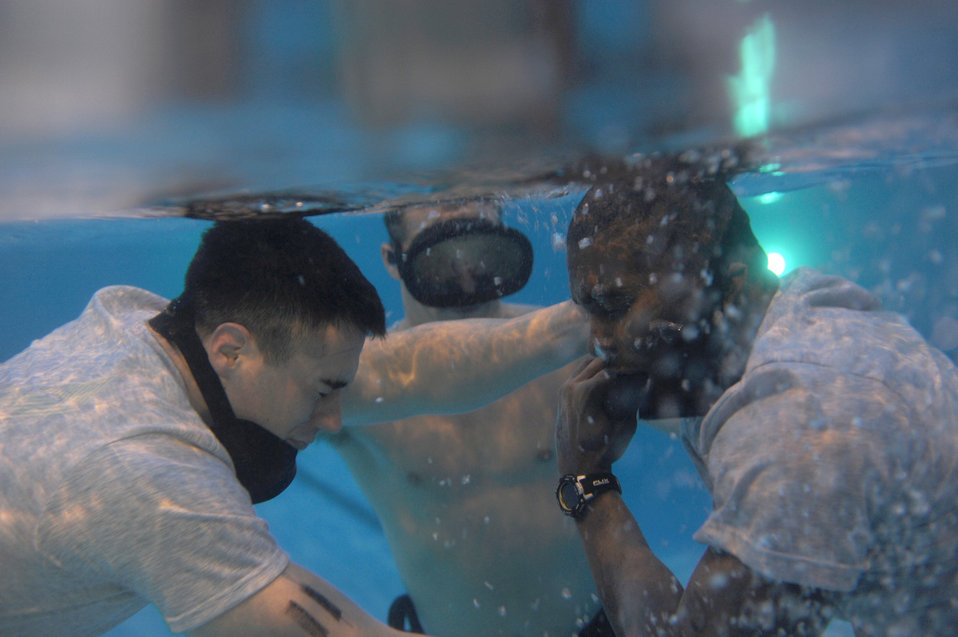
Combat control candidates vie for shot at scarlet beret

Senior Airmen Andrew Tilley and Abeoul Toure exercise their buddy breathing skills during water confidence training Feb. 8, 2011, at Hurlburt Field, Fla. The Airmen were taking part in a combat controller and special operations weather team assessment.